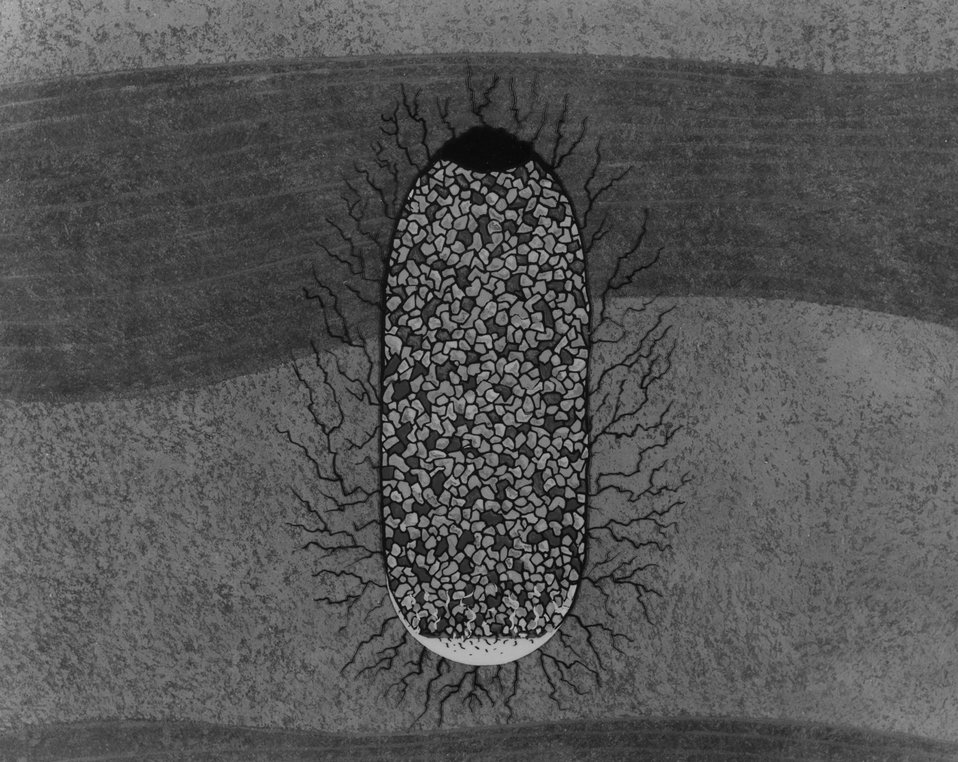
Artist's concept of a column (chimney) of broken rock resulting from the collapse of fractured rock into the cavity formed by a completely contained underground nuclear explosion. c. 1966